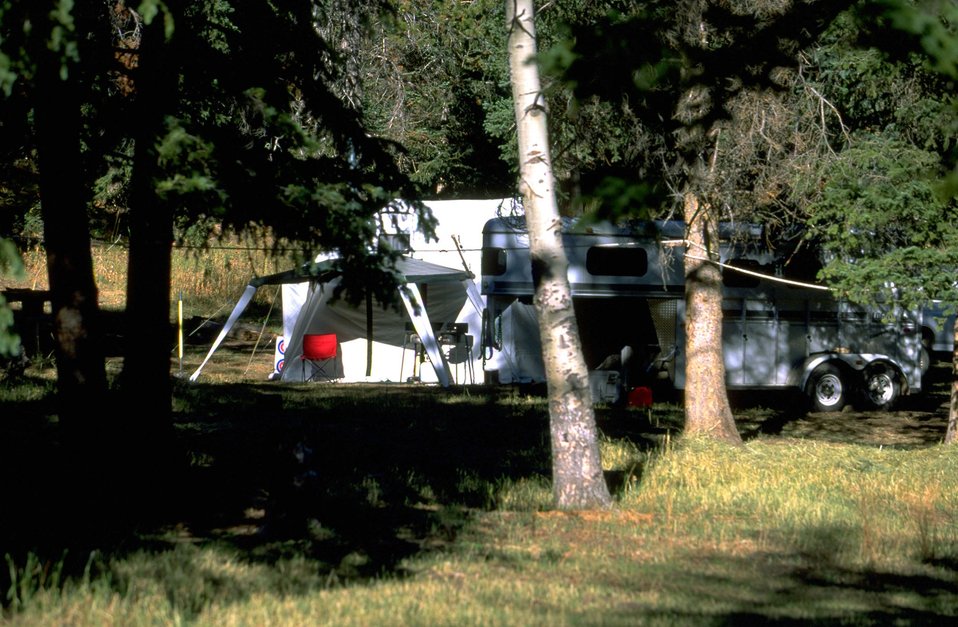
Camper in Campground